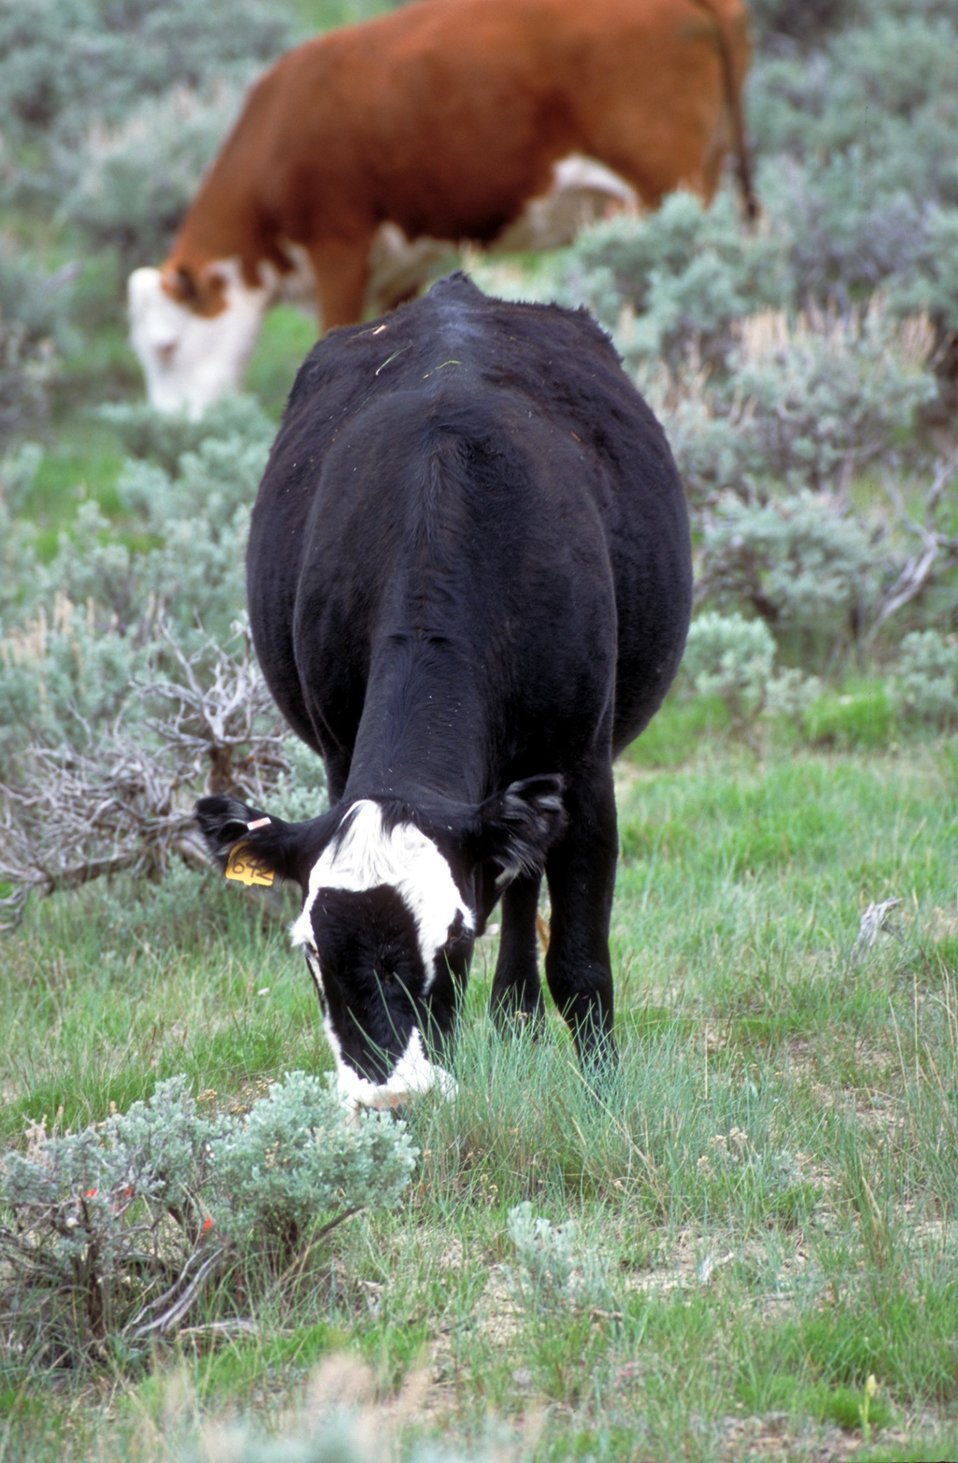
Livestock grazing on BLM lands near Price, Utah.